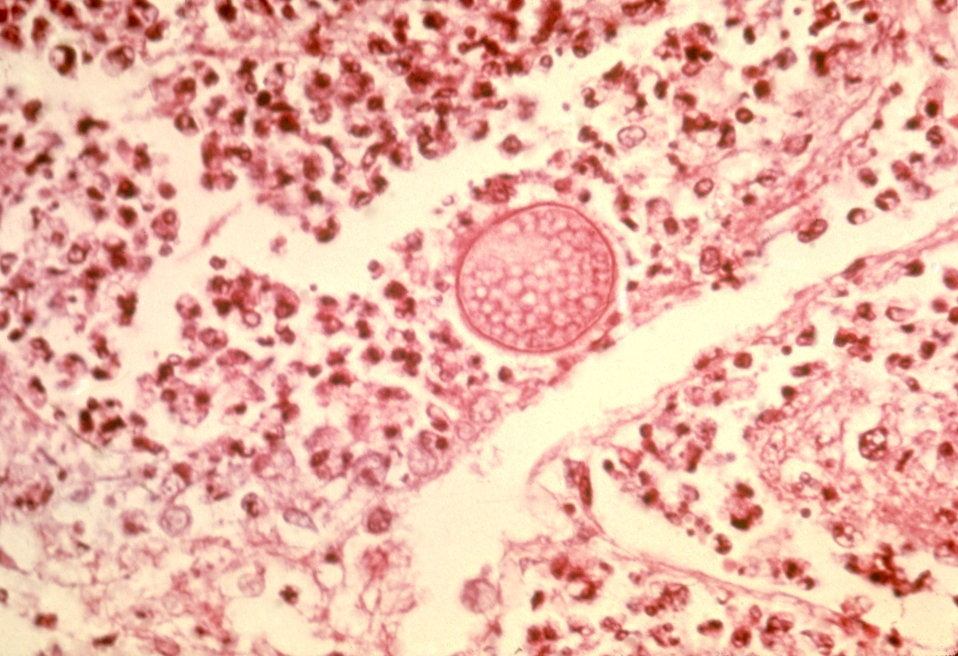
Histopathology of coccidioidomycosis of lung. Mature spherule with endospores of Coccidioides immitis, intense infiltrate of neutrophils.